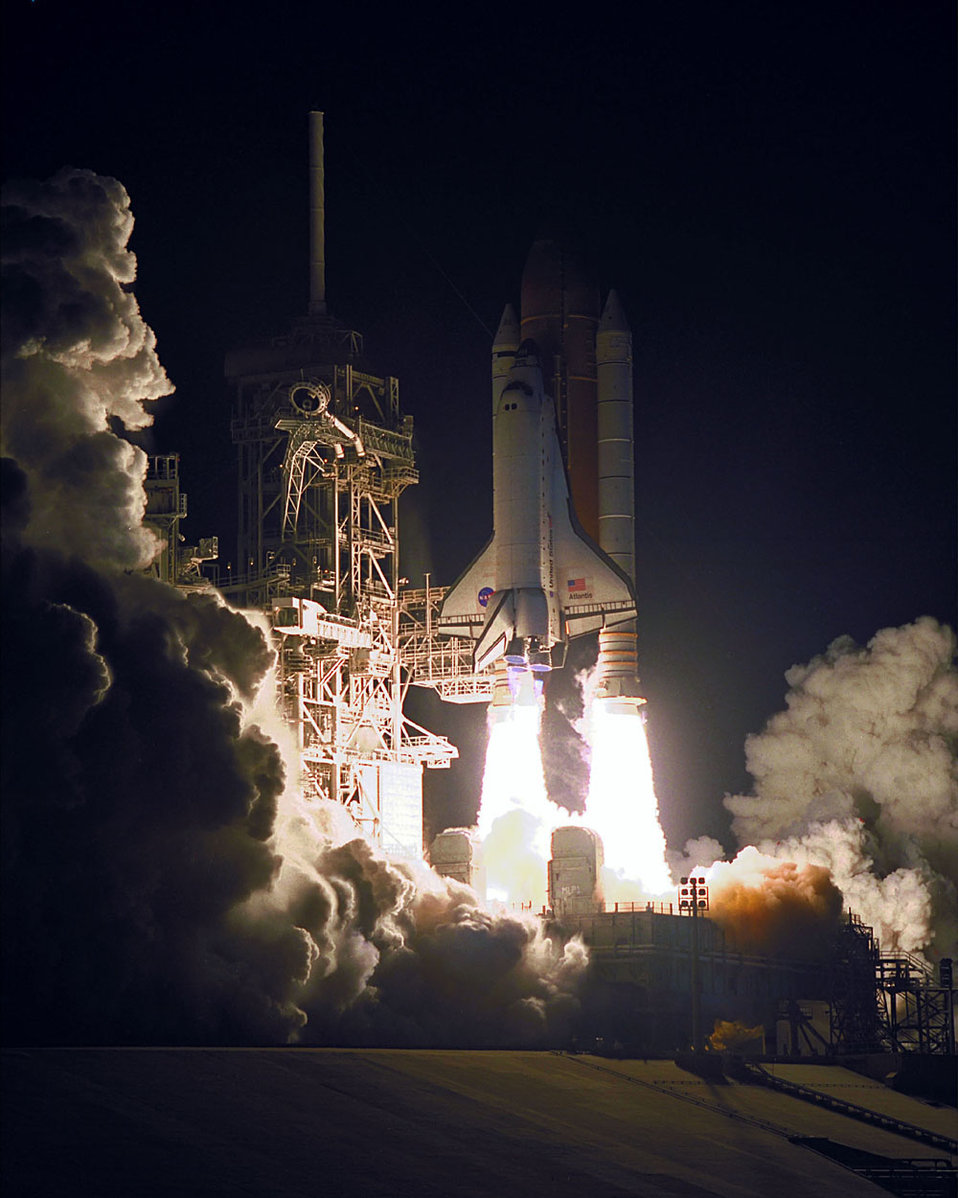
Atlantis liftoff

FILE PHOTO -- As Space Shuttle Atlantis lifts off from Launch Pad 39A on mission STS-101, twin columns of smoke from the solid rocket boosters trail behind. The mission is taking the crew of seven to the International Space Station to deliver logistics and supplies as well as to prepare the Station for the arrival of the Zvezda Service Module. Also, the crew will conduct one space walk and will reboost the space station from 230 statute miles to 250 statute miles. Three Atlantis crew members are U.S. Air Force officers, Col. James Halsell Jr., commander; Lt. Col. Scott Horowitz, pilot; and Lt. Col. Susan Helms, mission specialist.